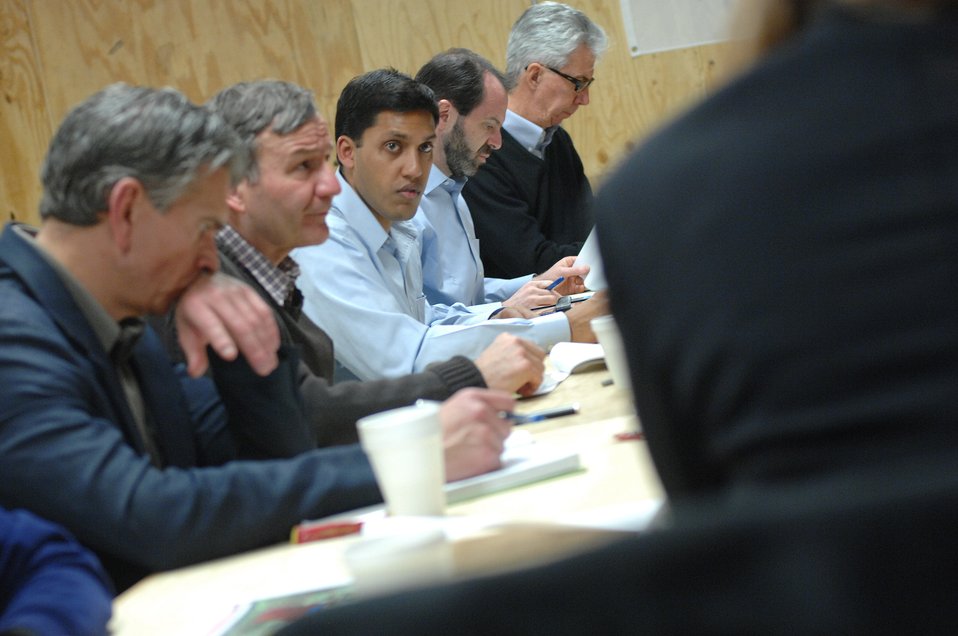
110209sv Shah532

U.S. Ambassador Karl W. Eikenberry and Dr. Rajiv Shah, Administrator of the United States Agency for International Development (USAID), meet with members of DST Surkh Rod in Nangarhar province on Wednesday, February 9, 2011. (S.K. Vemmer/Department of State)